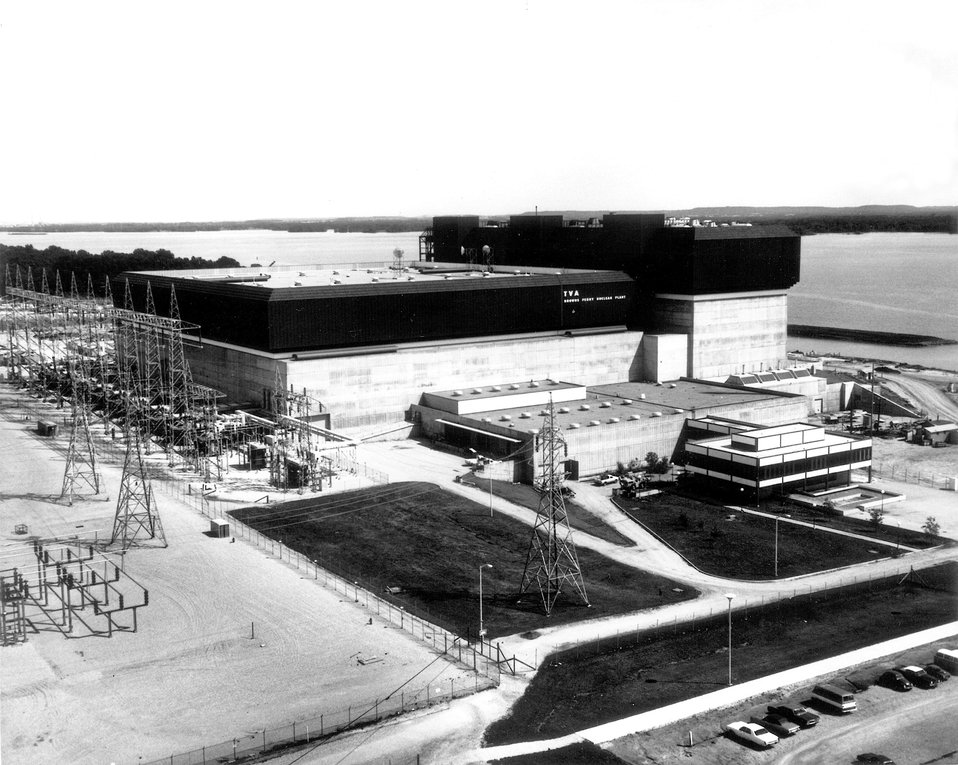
Browns Ferry...Tennessee Valley Authority's Browns Ferry Nuclear Plant showing the office and administrative buildings to the right of the main plant. Circa 1974.